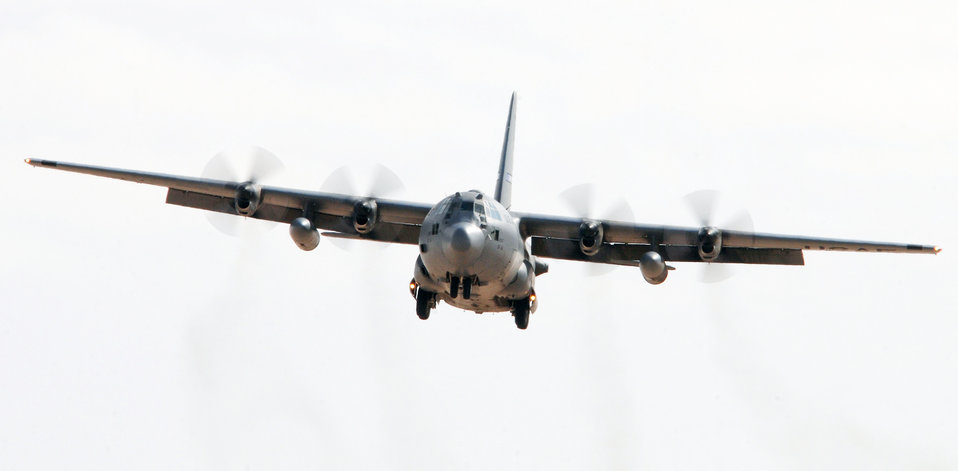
737th EAS reaches 10K mission milestone

A 737th Expeditionary Airlift Squadron C-130 Hercules prepares for landing at an air base in Southwest Asia. The 737th EAS successfully completed its 10,000th mission of the year on Dec. 23, 2009.